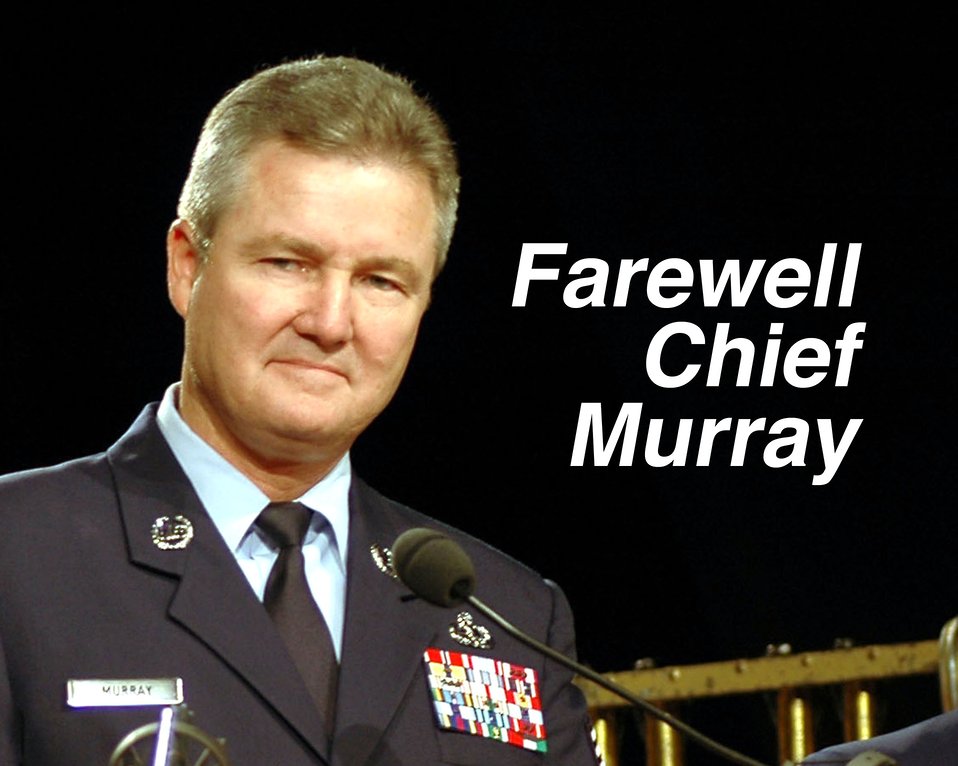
Farewell, Chief Murray

In his latest